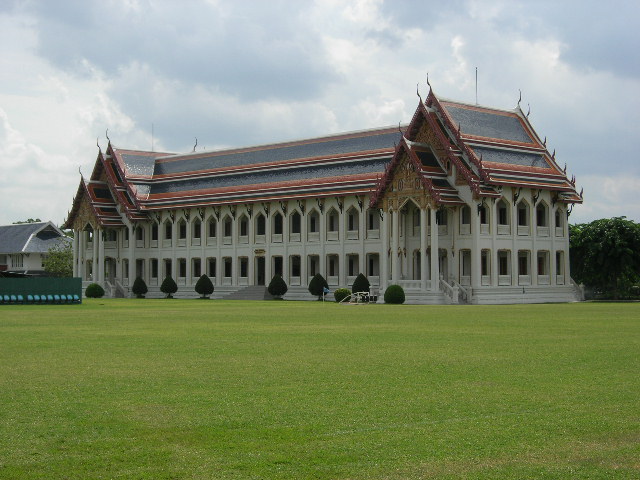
Vajiramonkut Building, main school building